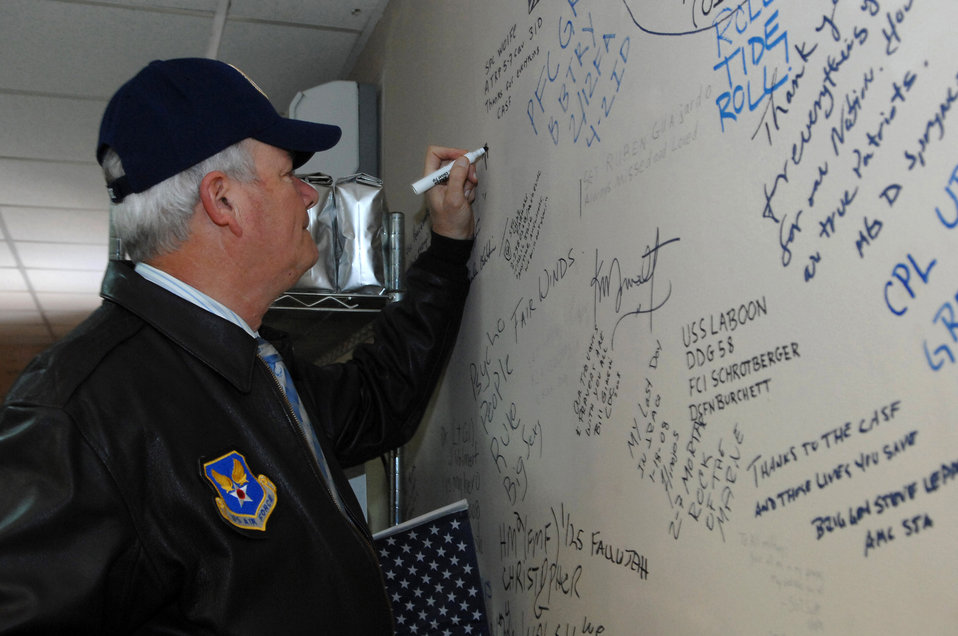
SECAF Visits Balad

Secretary of the Air Force Michael Wynne signs his name on a wall at the Contingency Aeromedical Staging Facility here, Feb. 2. The CASF is a component of the Air Force Theater Hospital where injured servicemembers are transported from the area of responsibility to hospitals in Germany and the U.S.